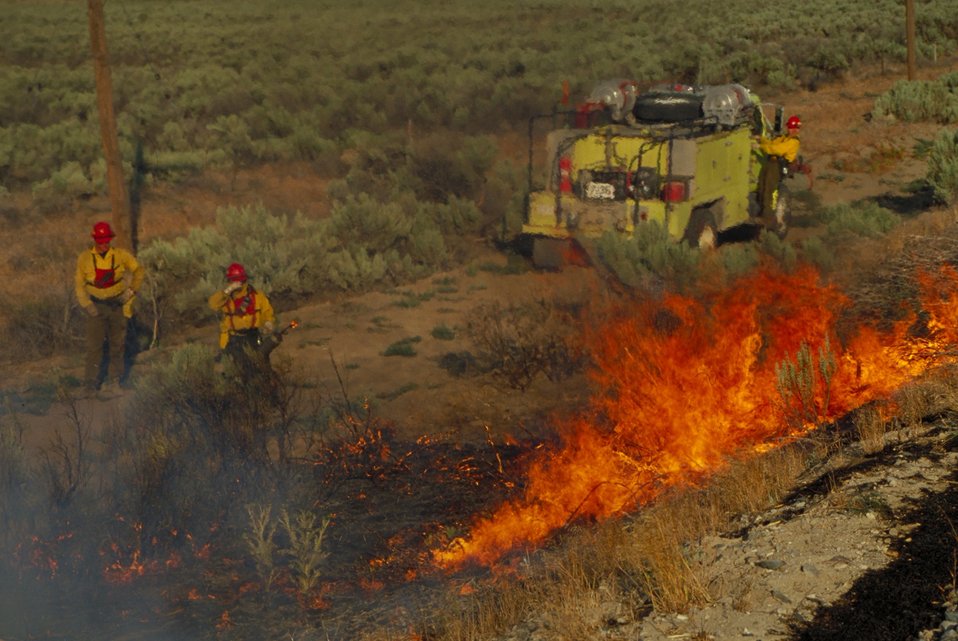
Prescribed brush burning Fire Season 2000 Lower Snake River District LSRD